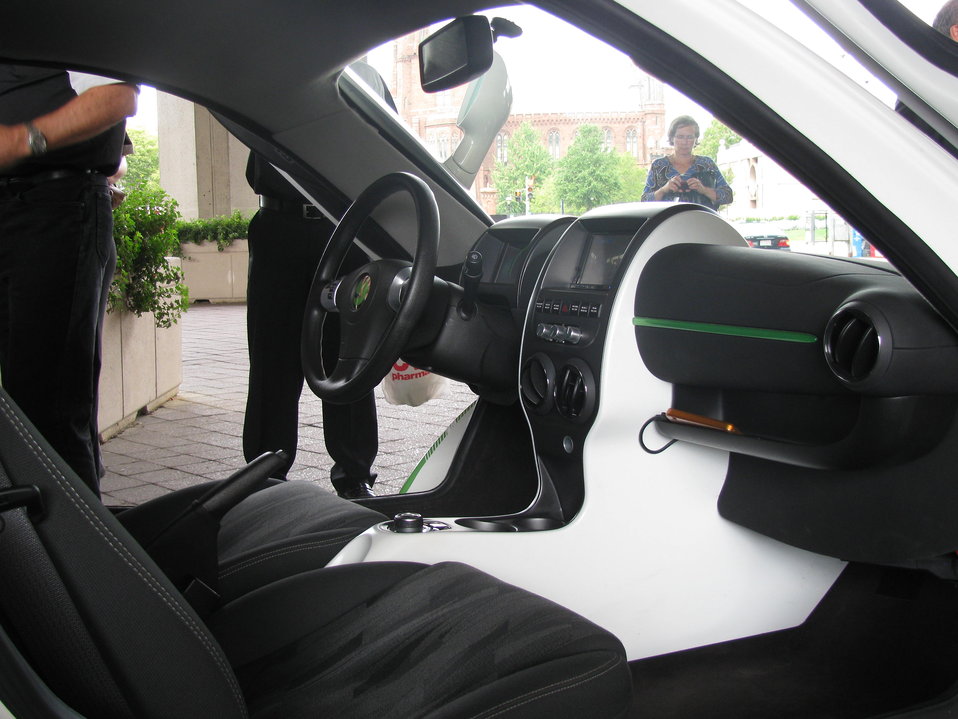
X Prize 003